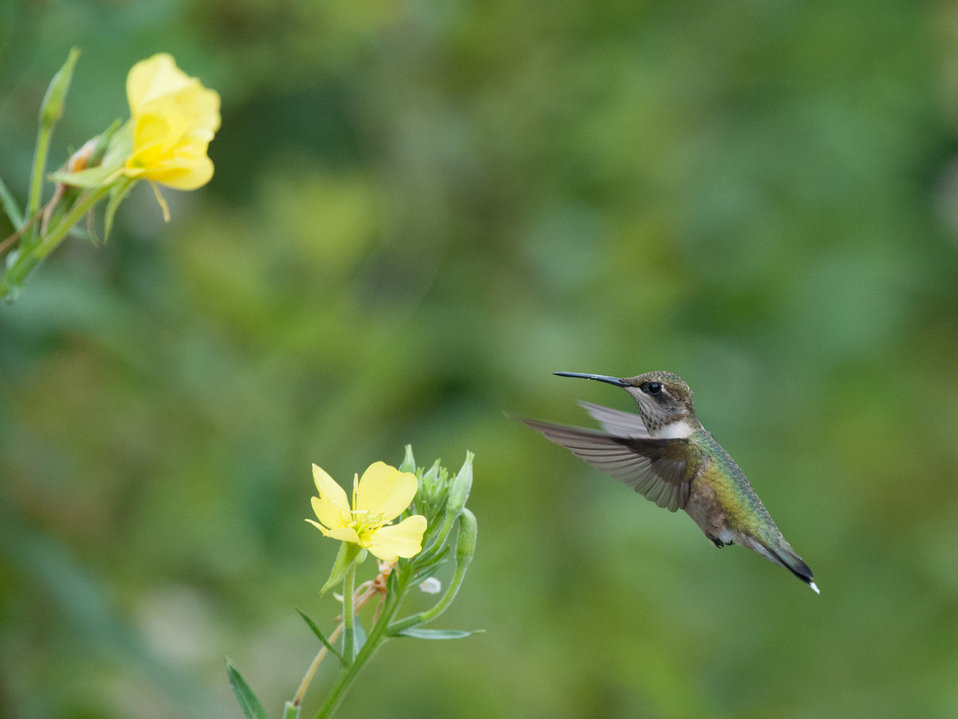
Ruby-throated Hummingbird

Photographed at the Quabbin Reservoir, MA.